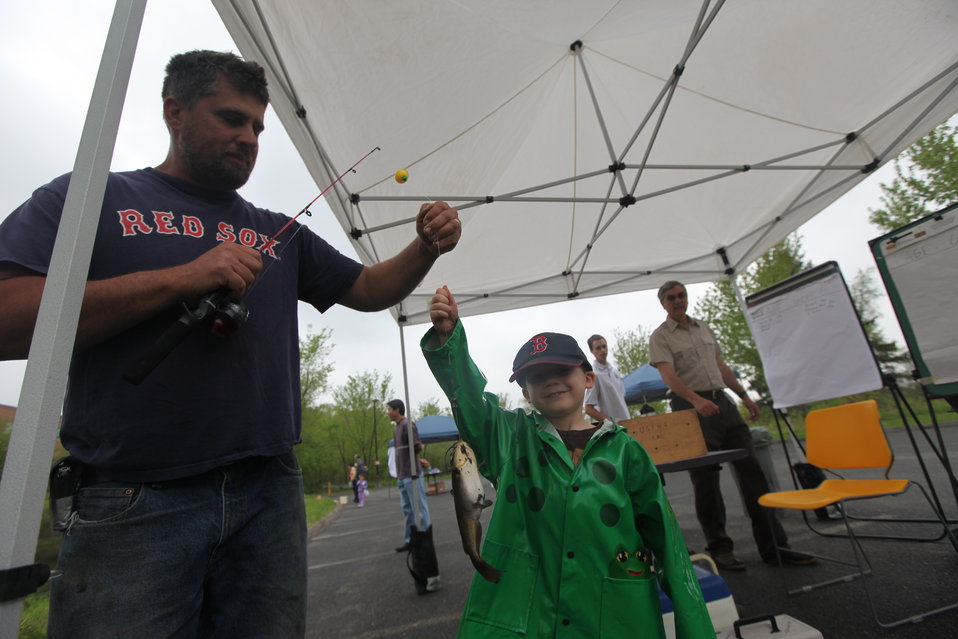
Fishing Derby